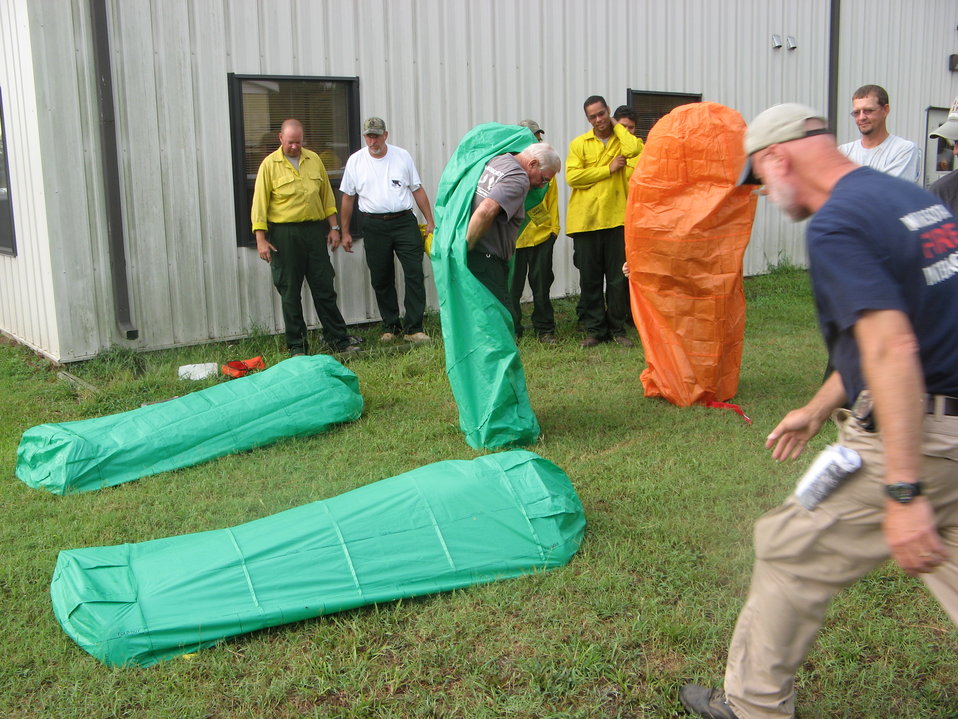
Safety first

Suffolk, VA, August 2011: Contractors on the Lateral West Fire on Great Dismal Swamp National Wildlife Refuge get training on how to deploy a fire shelter using practice shelters. Real shelters are made of fire resistant material.